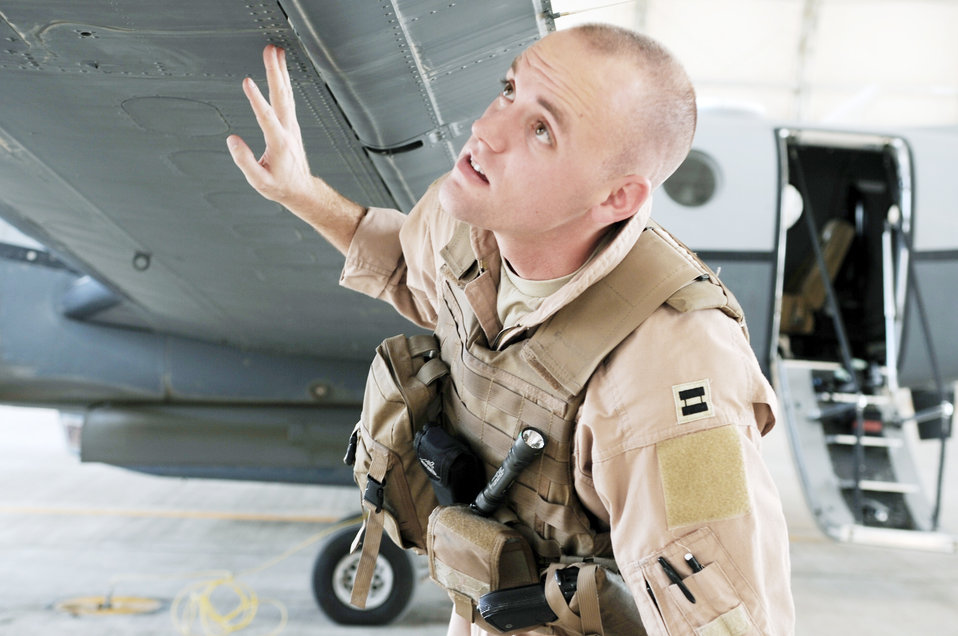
MC-12 aircrews complete 2,000th combat sortie

Capt. Ryan Woodman visually inspects an MC-12 Liberty prior to flight March 11, 2010, at Joint Base Balad, Iraq. Captain Woodman a pilot with the 362nd Expeditionary Reconnaissance Squadron.